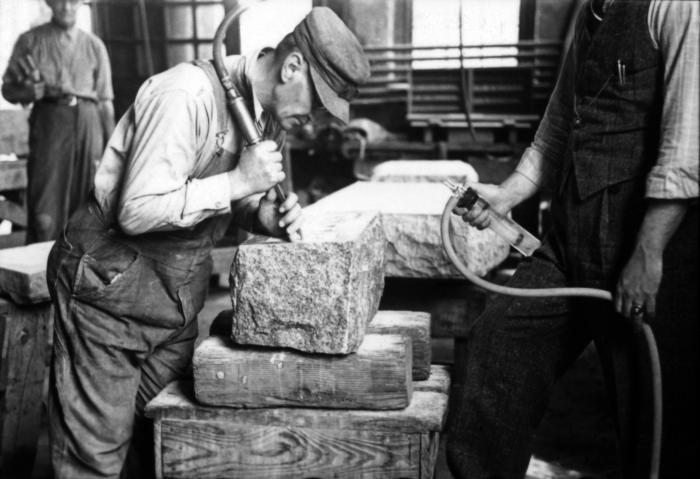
This October 1947 photograph was provided by the Center for Disease Control's (CDC), National Institute for Occupational Safety and Health (NIOSH). The image depicted a stonecutter in the process of engraving a granite gravestone in a Kansas workshop. Standing next to the worker was an industrial hygienist sampling the air, in order to test for the presence of, or the quantity of airborne particulates liberated by the stone-working process. Workers can be exposed to potential respiratory health hazards, as well as other physical injuries when working in stone cutting and quarrying industries.